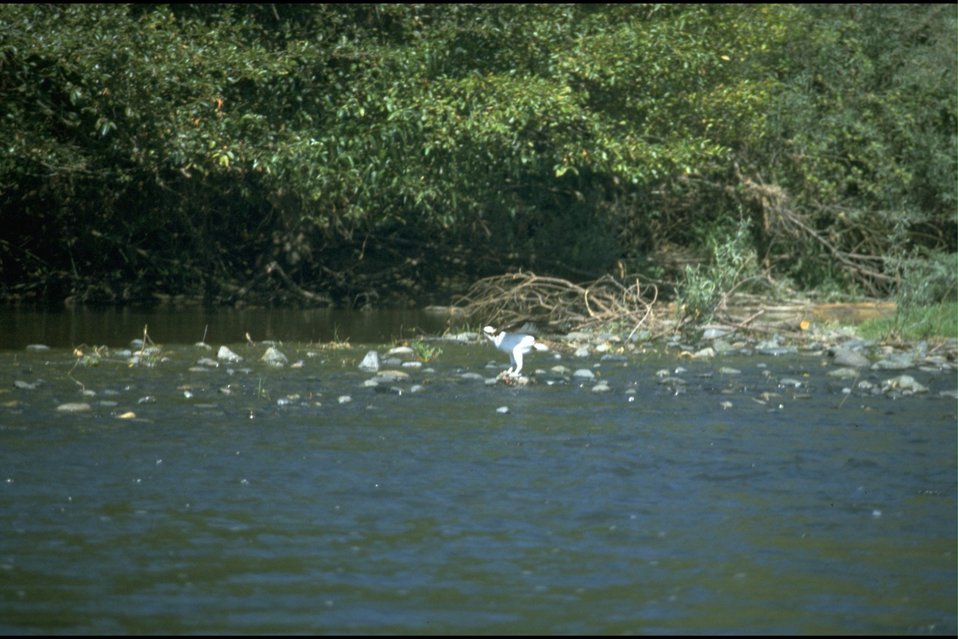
Rogue River - Osprey.